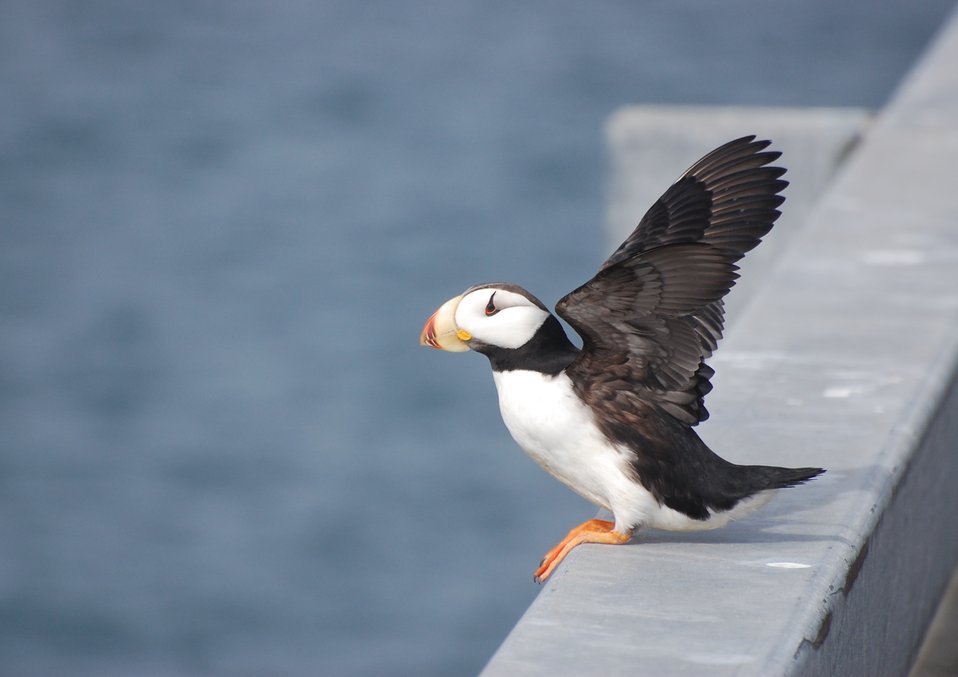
Horned Puffin

Cold Bay dock, near Izembek National Wildlife Refuge